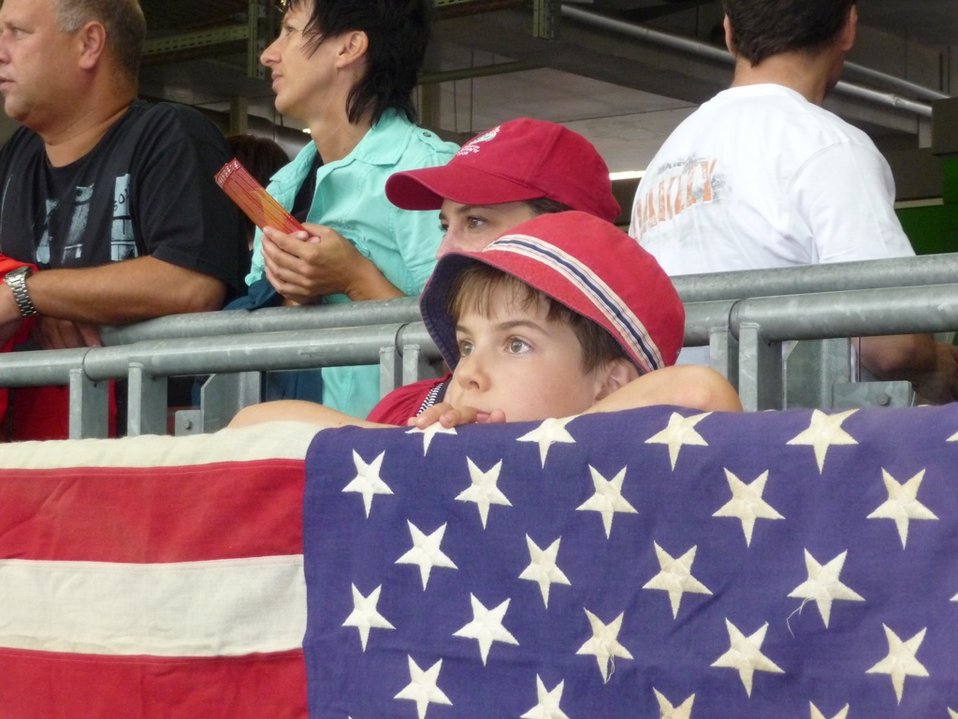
American Youth Watch the U.S.-Sweden World Cup Match

American youth watch U.S.-Sweden soccer match at the 2011 FIFA Women's World Cup in Wolfsburg, Germany, on July 6, 2011.